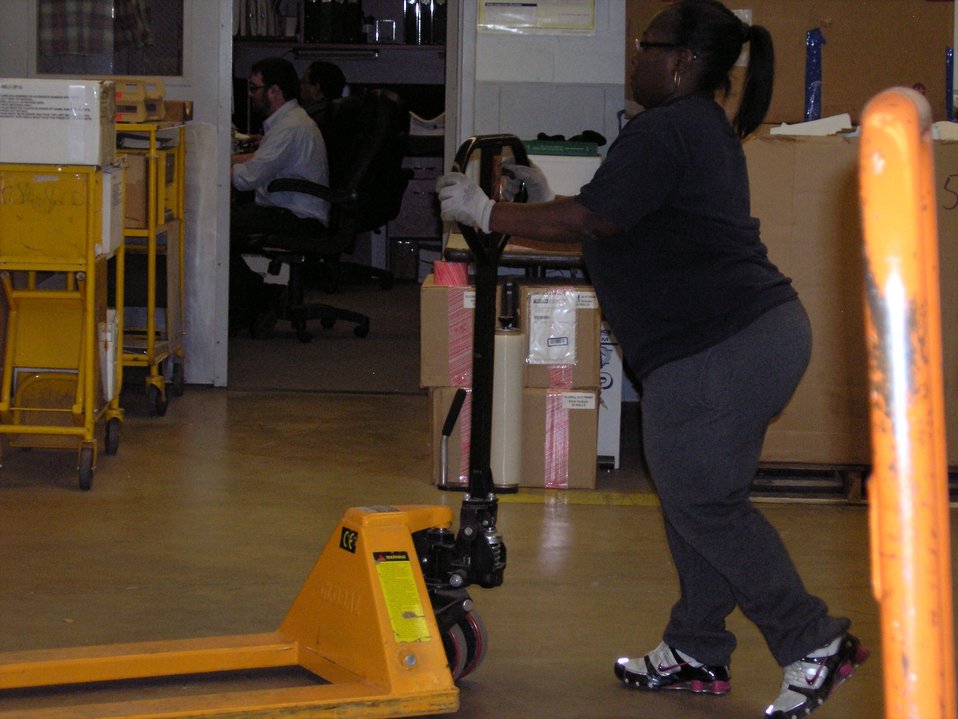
Sunarra Davis working the hand jack; Location: Chicago Federal Records Center, Chicago, IL